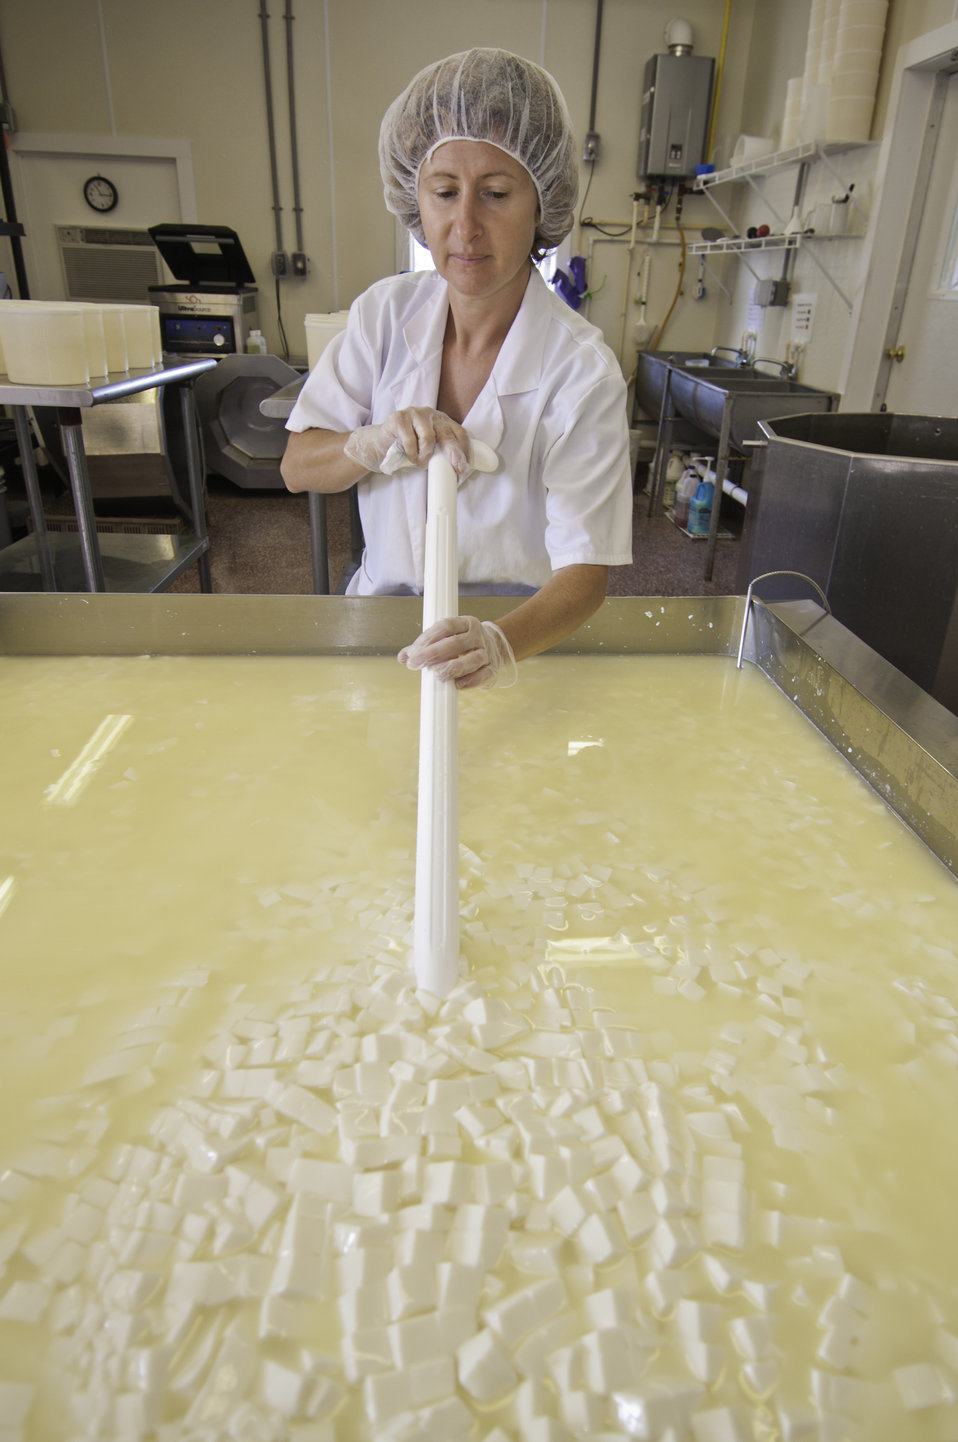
Chapel’s Country Creamery owner Holly Foster in Easton, MD has to constantly stir the milk curd of fresh raw milk so the milk curd that has been cut with curd knives does not set until whey has separated from the curd. The milk produced at the dairy is used to make artisanal cheeses. The dairy uses fresh raw milk 12-24 hours old. The milk is all-natural and contains no synthetic hormones, antibiotics, or chemical compounds. The 1150 pounds of milk in the vat will be used to make the dairy’s “Bay Blue” Cheese.